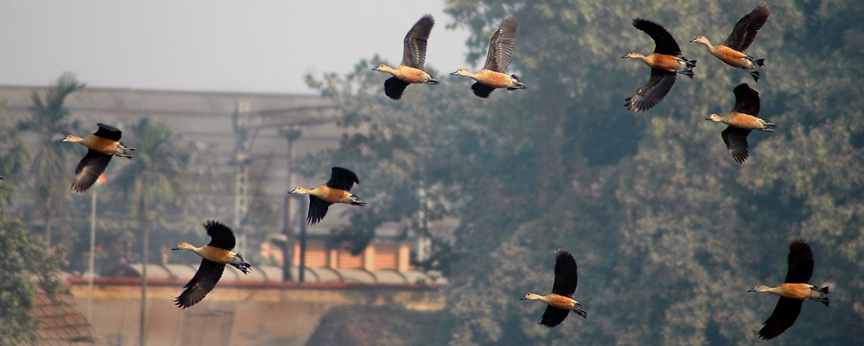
Uploaded by request of Sandipan Majumdar

Taken in Santragachhi, West Bengal, India.

This photo was taken at Santragachhi Lake. These migrates birds were coming from abroad. Very recently their number is decreasing due to the pollution of that lake.